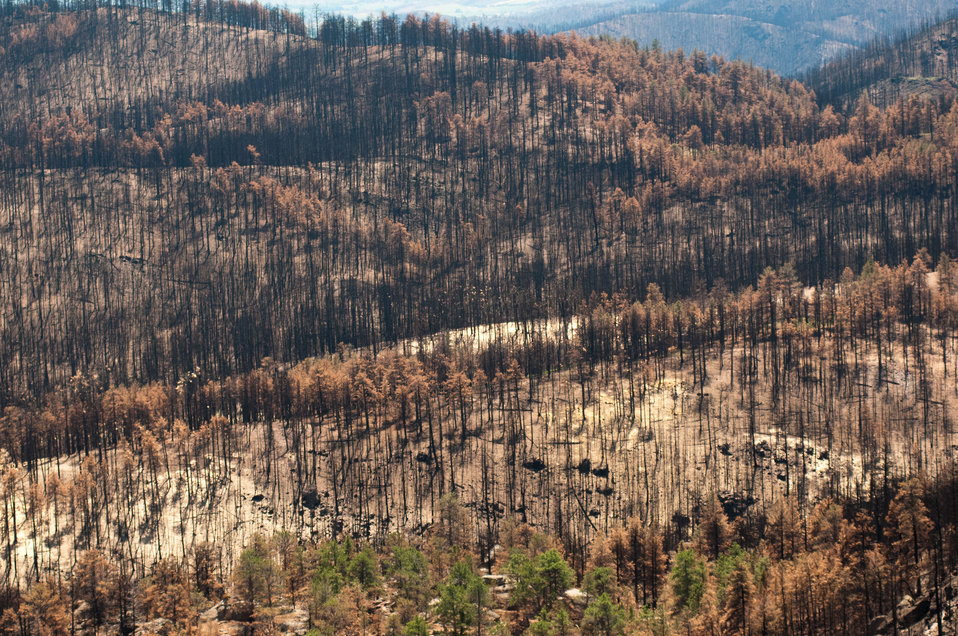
The aerial application of yellow straw continues to mitigate soil and ash runoff from the mountainous terrain leading to Seaman Reservoir, drinking water resource for the City of Greeley, on Friday, July 20, 2012, near Fort Collins, Colo. Red areas are burnt trees with pine needles that will fall tho the ground and form a mulch. Green areas are the remaining healthy trees that provide shade and protection to promote the growth of ground cover plants and shrub. Because of steep terrain, helicopters must be used to quickly deliver 1,800 tons of straw to Forest Service lands, and private and other lands that receive a seed mix and straw to promote ground cover plant growth on ash-covered lands. In total, 1,800 tons of straw will be applied during the 14-day operation. One quarter of the cost was paid by the City of Greeley and the U.S. Department of Agriculture funded the remainder. The Hewlett Gulch Fire was started by a camper’s alcohol stove, on May 14, at the saddle of a picturesque mountain ridge along the Hewlett Gulch Trail of Poudre Canyon, in the Roosevelt National Forest, 60 miles north of Denver. At it’s peak, more than 400 firefighters were battling fires being pushed by 50 mph winds that helped blacken over 12-square-miles of dry ground cover, brush and trees. Many of the trees were already dead and tinder dry from beetle-kill. The water in the reservoir remains clean and clear, while downstream water flow has gone from famous Colorado clear water to nearly black flows of water heavily laden with ash, silt, and burnt debris that recent thunderstorms have already washed down from the mountainsides.